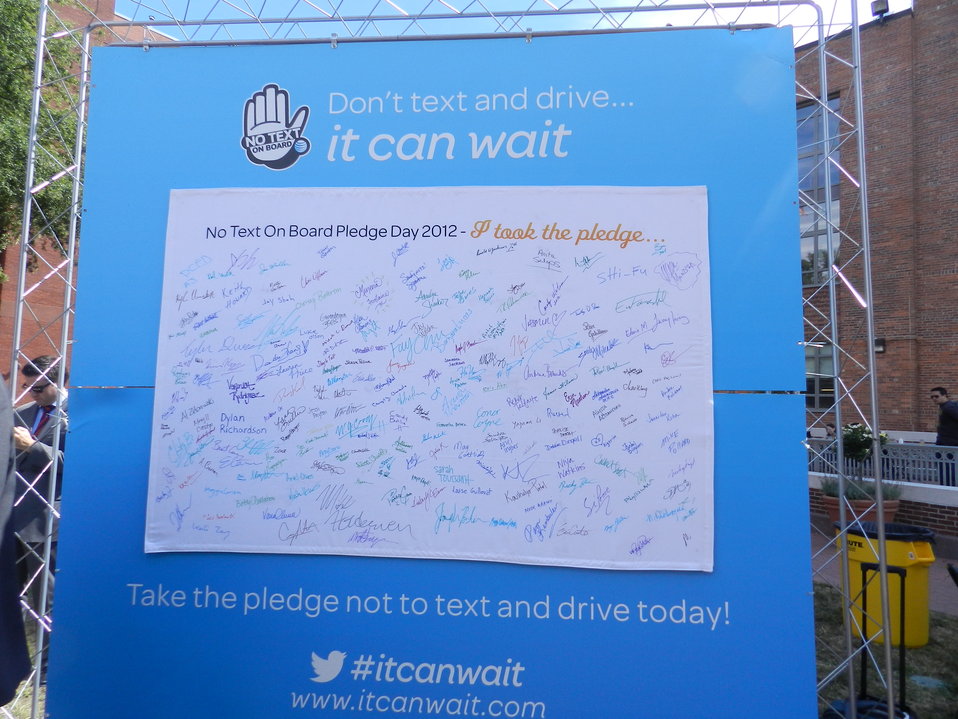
It Can Wait Pledge Day 9.19.12

Pledge board at the ‘No Text On Board’ Pledge Day Event, The George Washington University, Washington, D.C.
September 19, 2012